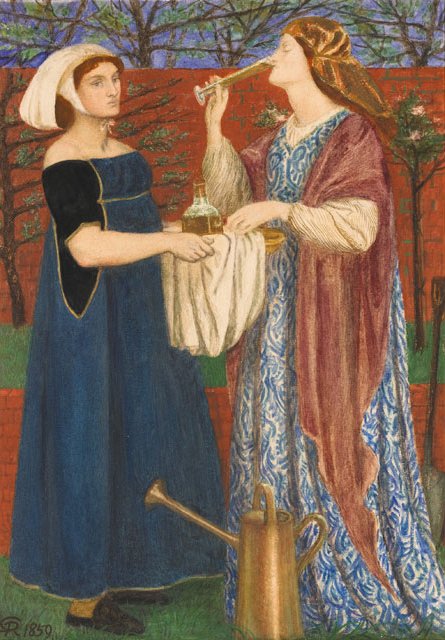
The Bower Garden, watercolor by Dante Gabriel Rossetti, 1859